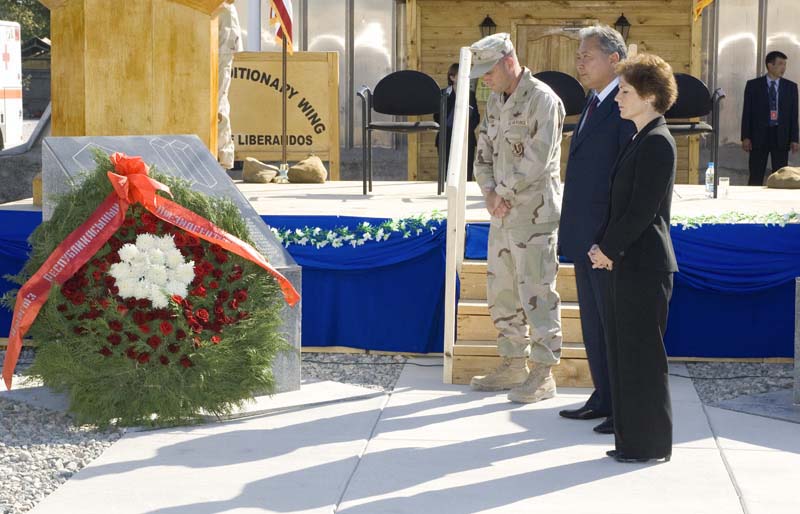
Manas Air Base hosts Kyrgyz president

Col. Joel Reese, 376th Air Expeditionary Wing commander; Kurmanbek Bakiev, the president of Kyrgyzstan; and Marie Yovanovitch, U.S. Ambassador to the Kyrgyz Republic; pay tribute to the people who were killed during the terrorist attacks of 9/11.